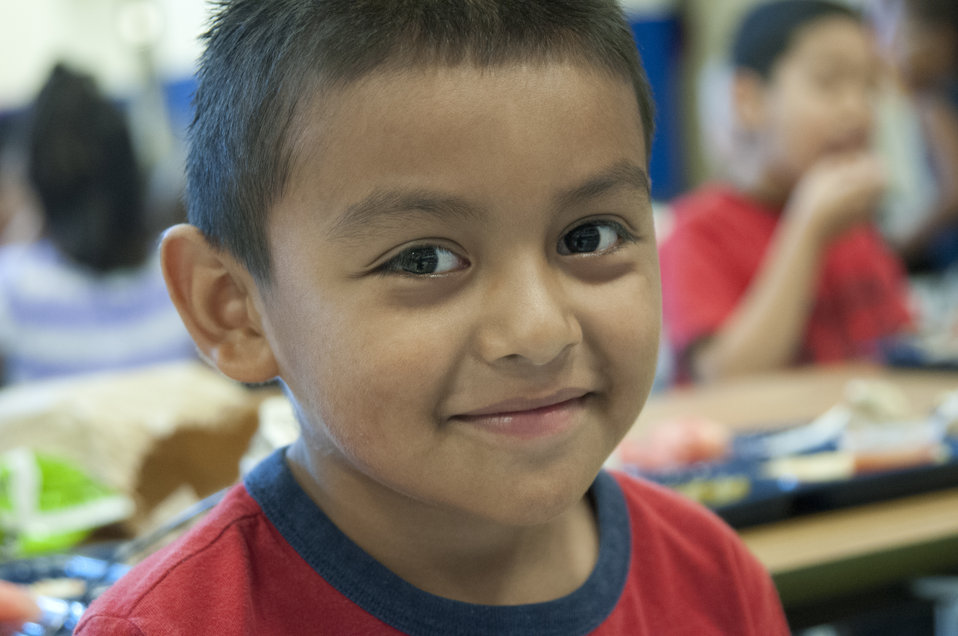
School lunch staff and students enjoy the new school lunch menu created to meet the new standards at the Yorkshire Elementary School in Manassas, VA on Friday, Sept. 7, 2012.